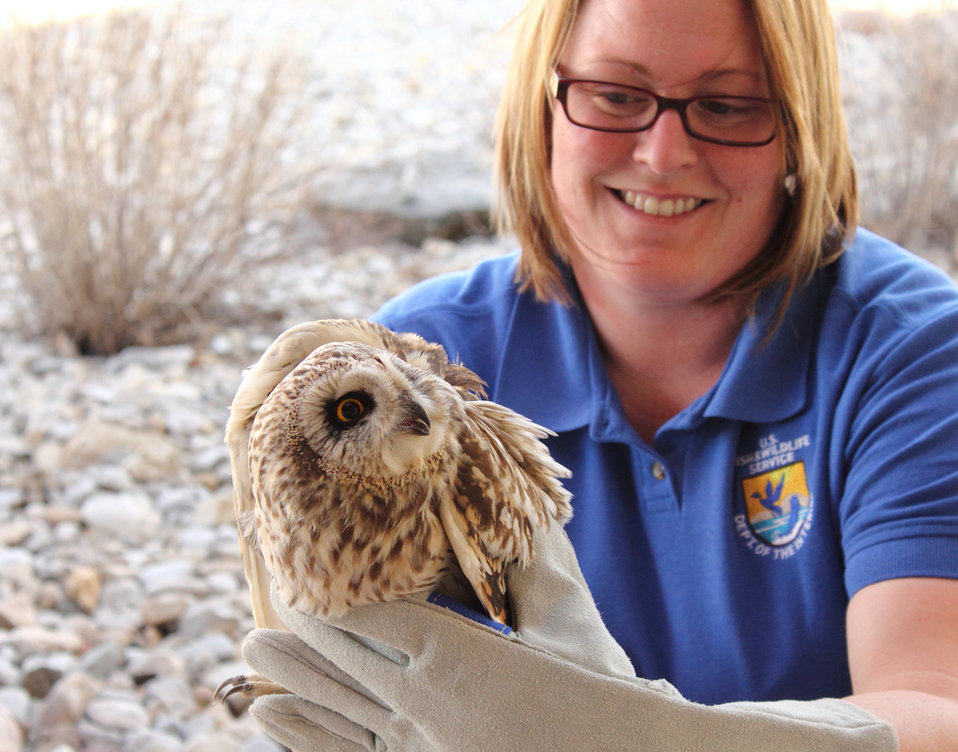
Charles M. Russell National Wildlife Refuge, MT

USFWS employee Jackie Fox prepares to take an injured short eared owl to a wildlife rehabilitation center.